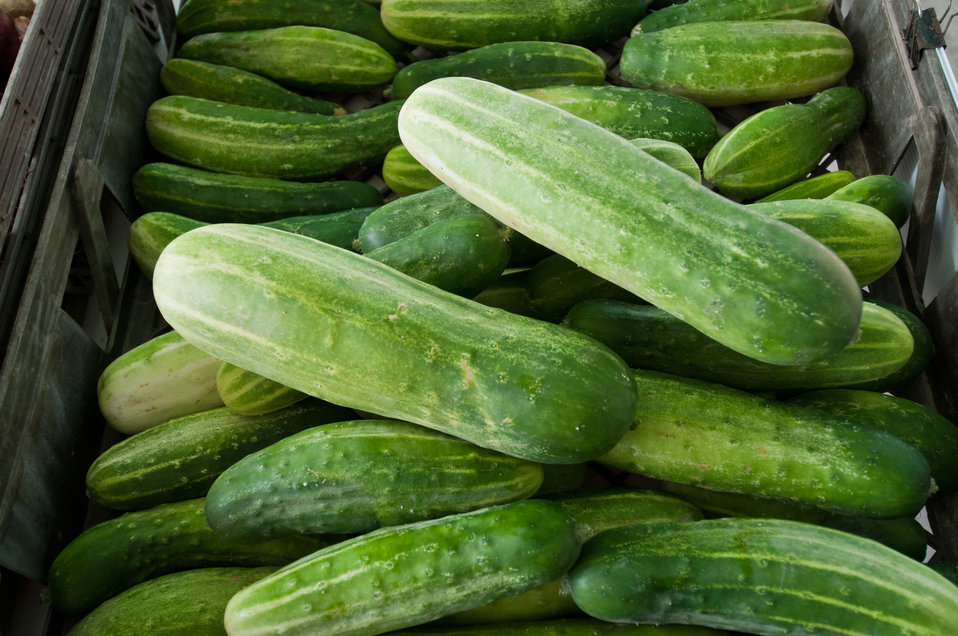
Cucumbers for sale at the Bath County Agricultural Education and Marketing Center, Owingsville, KY, on Friday, July 15, 2011. The Center was the recipient of a $400,000 Rural Business Enterprise Grant. It has given farmers and producers from Bath and surrounding counties the opportunity to manufacture and market their locally grown and locally produced value-added and “Kentucky Proud” branded products, including but not limited to, fresh produce, artisan crafts and specialty food products. The Center is open year-round and allows residents to sell products in four different retail categories, including Kentucky products, regional crafts, “green” groceries and bakery/deli. Several producers expressed their gratitude for Rural Development’s assistance in making the center a reality. The project was made possible through funding the American Recovery and Reinvestment Act of 2009 enacted by the 111th United States Congress in February 2009 and signed into law on February 17, 2009, by President Barack Obama.